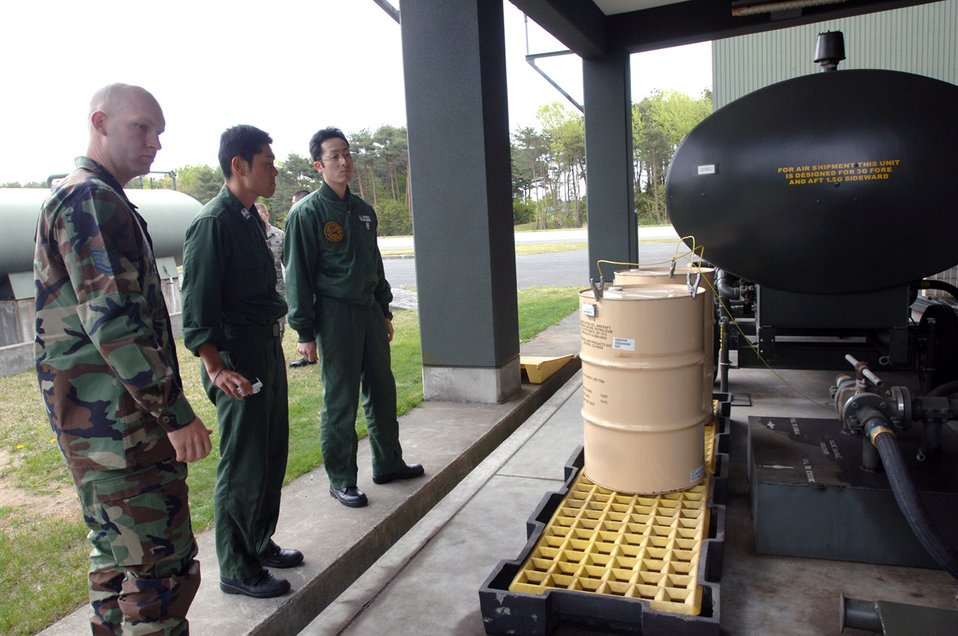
U.S., Japan forces join together for bilateral exchange

Tech. Sgt. Marcus Sydow briefs Japanese Air Self Defense Force Tech. Sgt. Takuma Ota (center) and Staff Sgt. Masanobu Suzuki (right) on the capabilities of a fuel tank May 15 at Misawa Air Base, Japan. Sergeant Sydow is the propulsion shop nonpowered age NCO in charge.